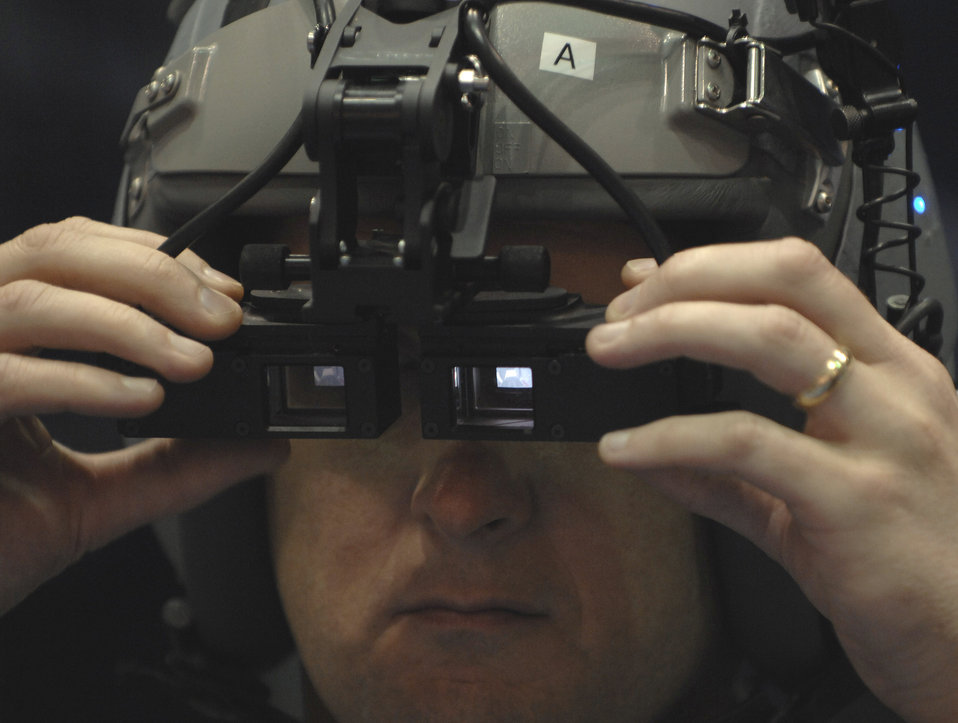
Technology conference powers down

Maj. Dave Edney tries on the enhanced loadmaster training module that uses augmented reality Nov. 30 during the Interservice/Industry Training, Simulation and Education Conference in Orlando, Fla. The augmented reality allows trainees to see real and virtual reality as the visual display adds different scenarios to training.